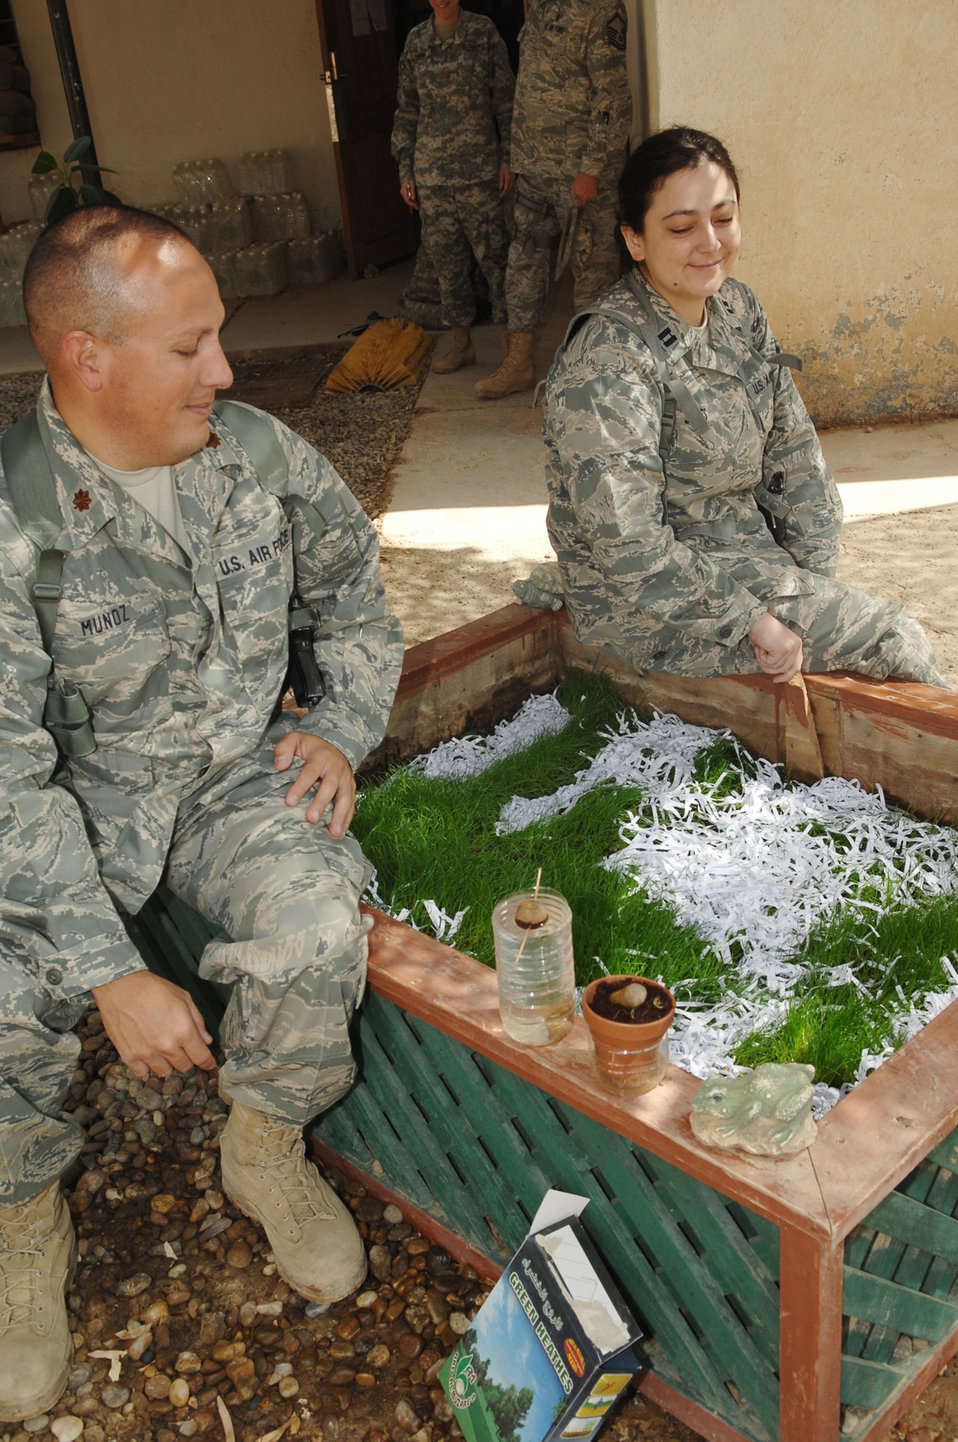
Embedded Airmen aid Taji Soldiers

Maj. Derek Munoz and Capt. Joy Jones sit by a patch of grass cultivated by mental health technicians outside the combat stress clinic Oct. 7, 2009, at Camp Taji, Iraq. Major Munoz and Captain Jones are 332nd Air Expeditionary Wing psychologists. The Airmen are two of the four 332nd AEW mental health professionals embedded with the Army's 55th Medical Company here.